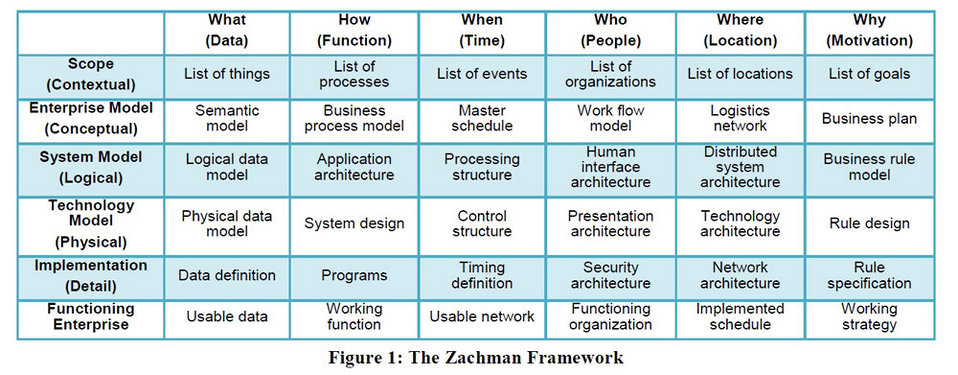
Zachman Framework

A new analysis tool from NIST: How to parse a standard.